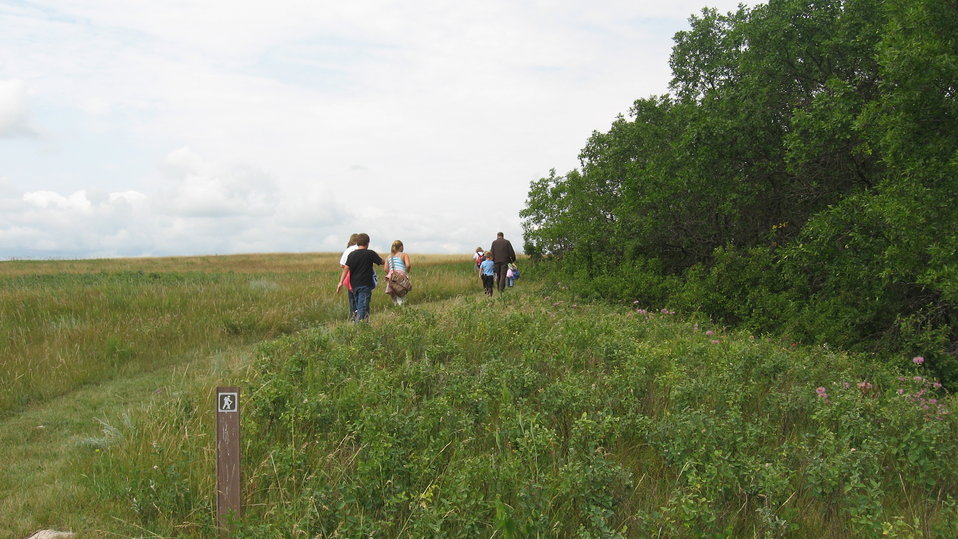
Group Hiking on Munch's Coulee National Hiking Trail

Kenmare Summer Reading Program group hiking with Refuge staff on Munch's Coulee Hiking trail at Des Lacs National Wildlife Refuge in North Dakota.